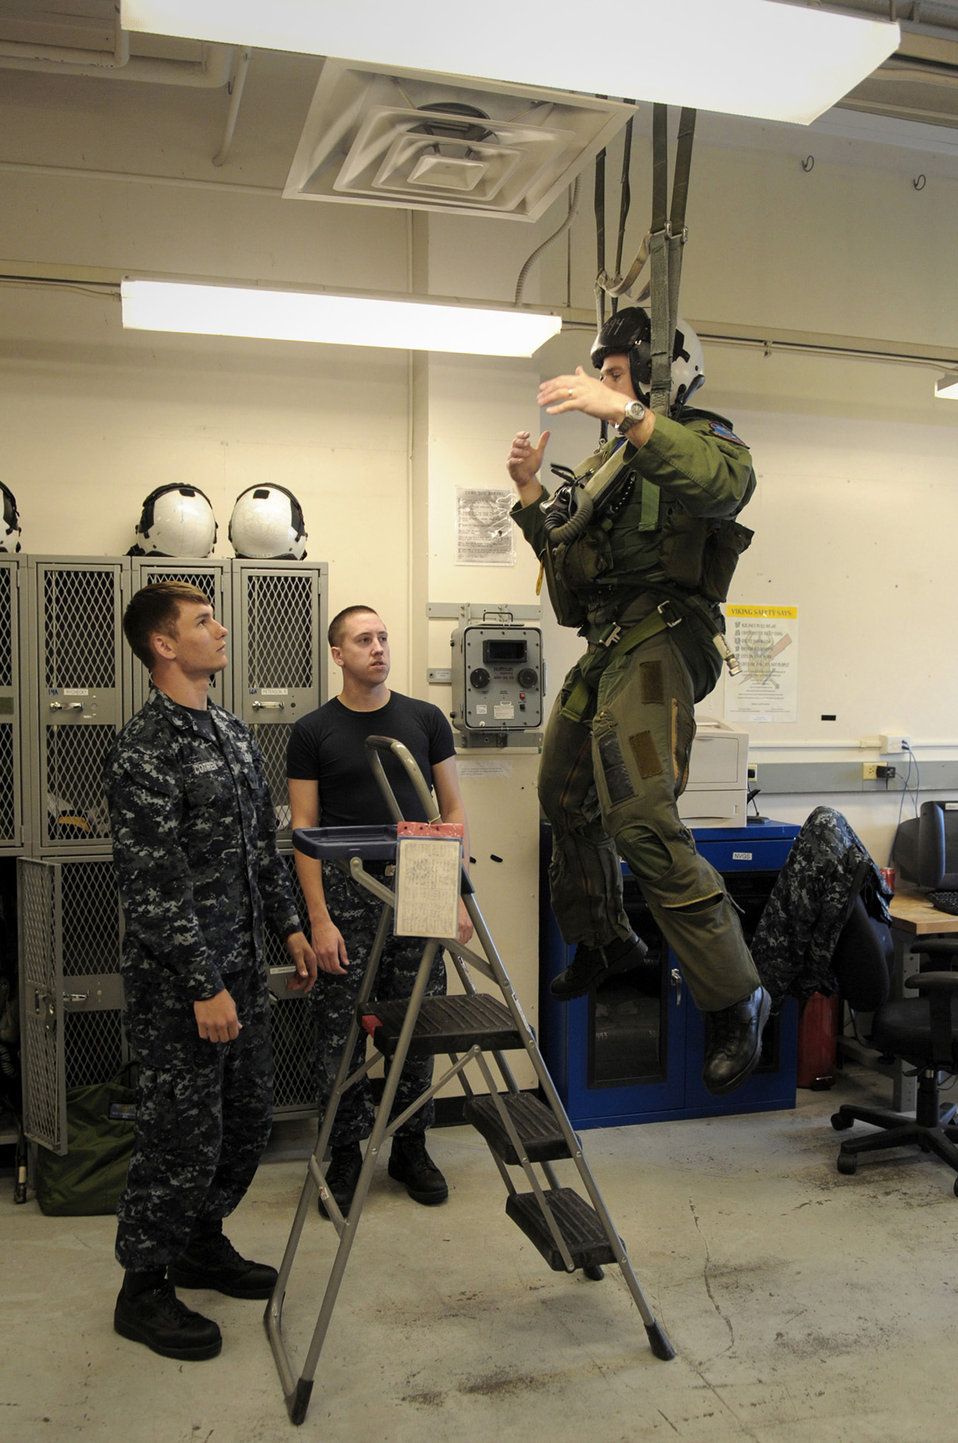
Hanging out

Capt. Cole Davenport hangs while aircrew survival equipment men perform a parachute harness safety check June 9, 2011, at Naval Air Station Whidbey Island, Wash. Davenport, attending a Navy training course, is an electronic warfare officer assigned to Fixed Wing Electronic Attack Squadron 129.